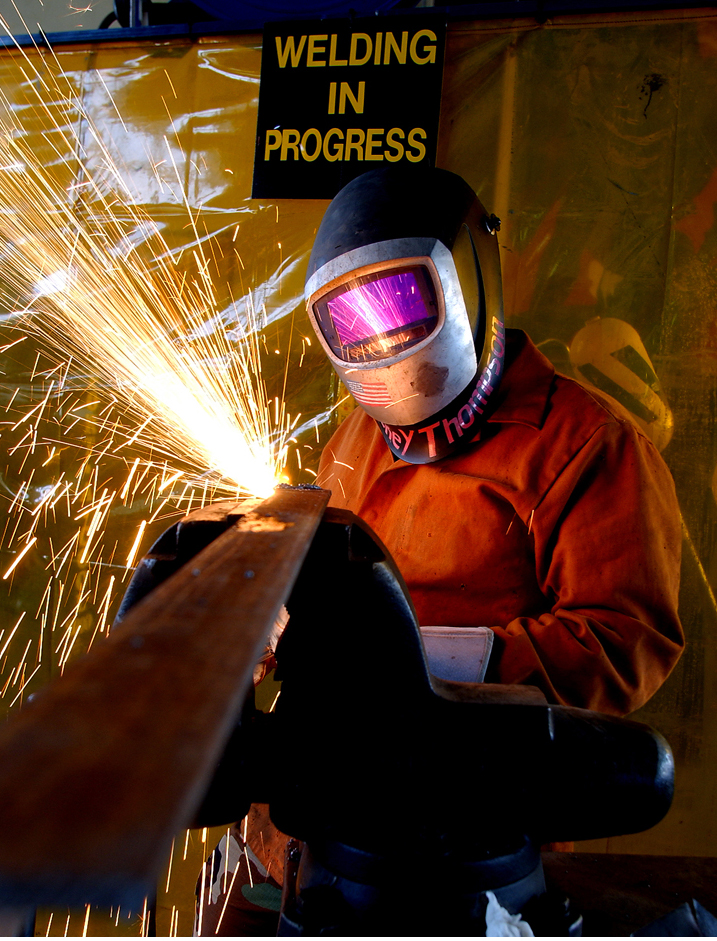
Sparkling personality

INCIRLIK AIR BASE, Turkey (AFPN) -- Staff Sgt. Steve Ashurst cuts metal to repair aerospace ground equipment here. He is a aircraft metals technician assigned to the 39th Maintenance Squadron.